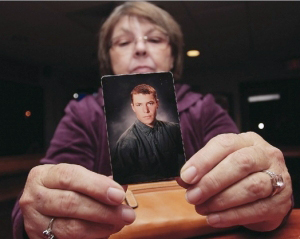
Taking Jared's flight

Janet Monti holds up a picture of her son, Army Staff Sgt. Jared Monti, inside the 333rd Fighter Squadron lounge Nov. 9, 2010, at Seymour Johnson Air Force Base, N.C. The following day, Ms. Monti took flight in honor of her son.